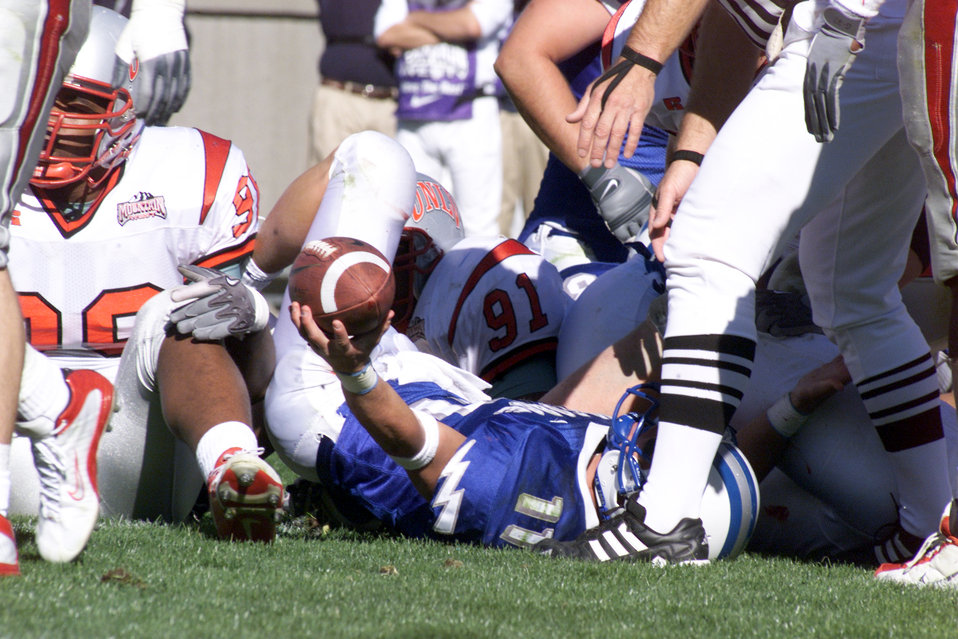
UNLV at academy

U.S. AIR FORCE ACADEMY, Colo. -- U.S. Air Force Academy quarterback Chance Harridge holds up the football for all to see, leaving no doubt that he scored his second touchdown of the day on this 1-yard dive into the end zone. Harridge's two scores led the Falcons to a 24-7 win over the University of Nevada, Las Vegas, on Oct. 11.